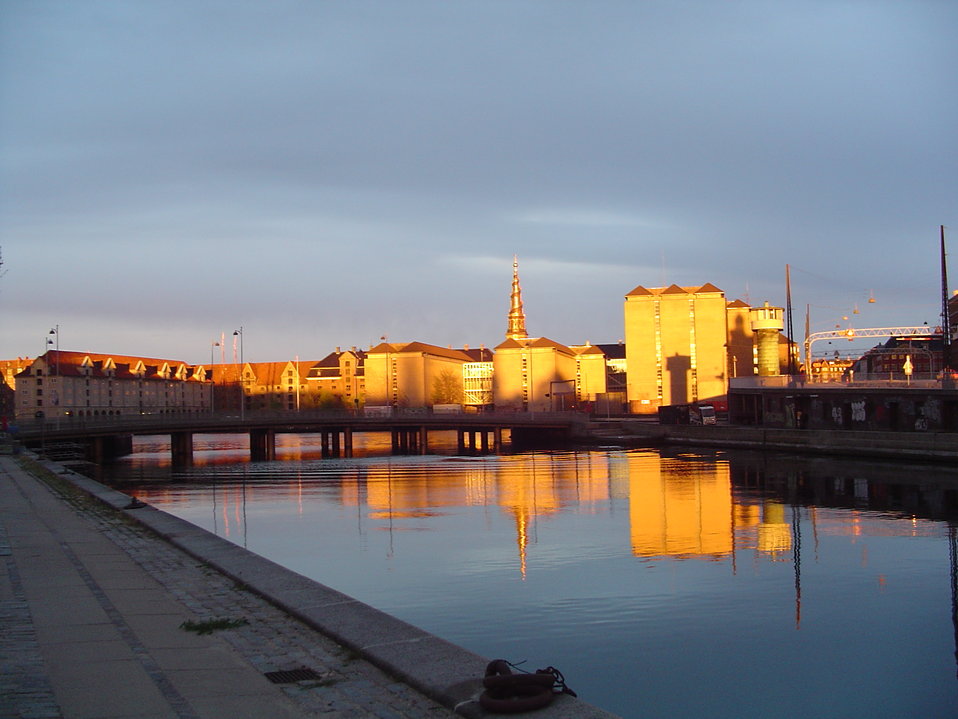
Danish Foreign Ministry 6